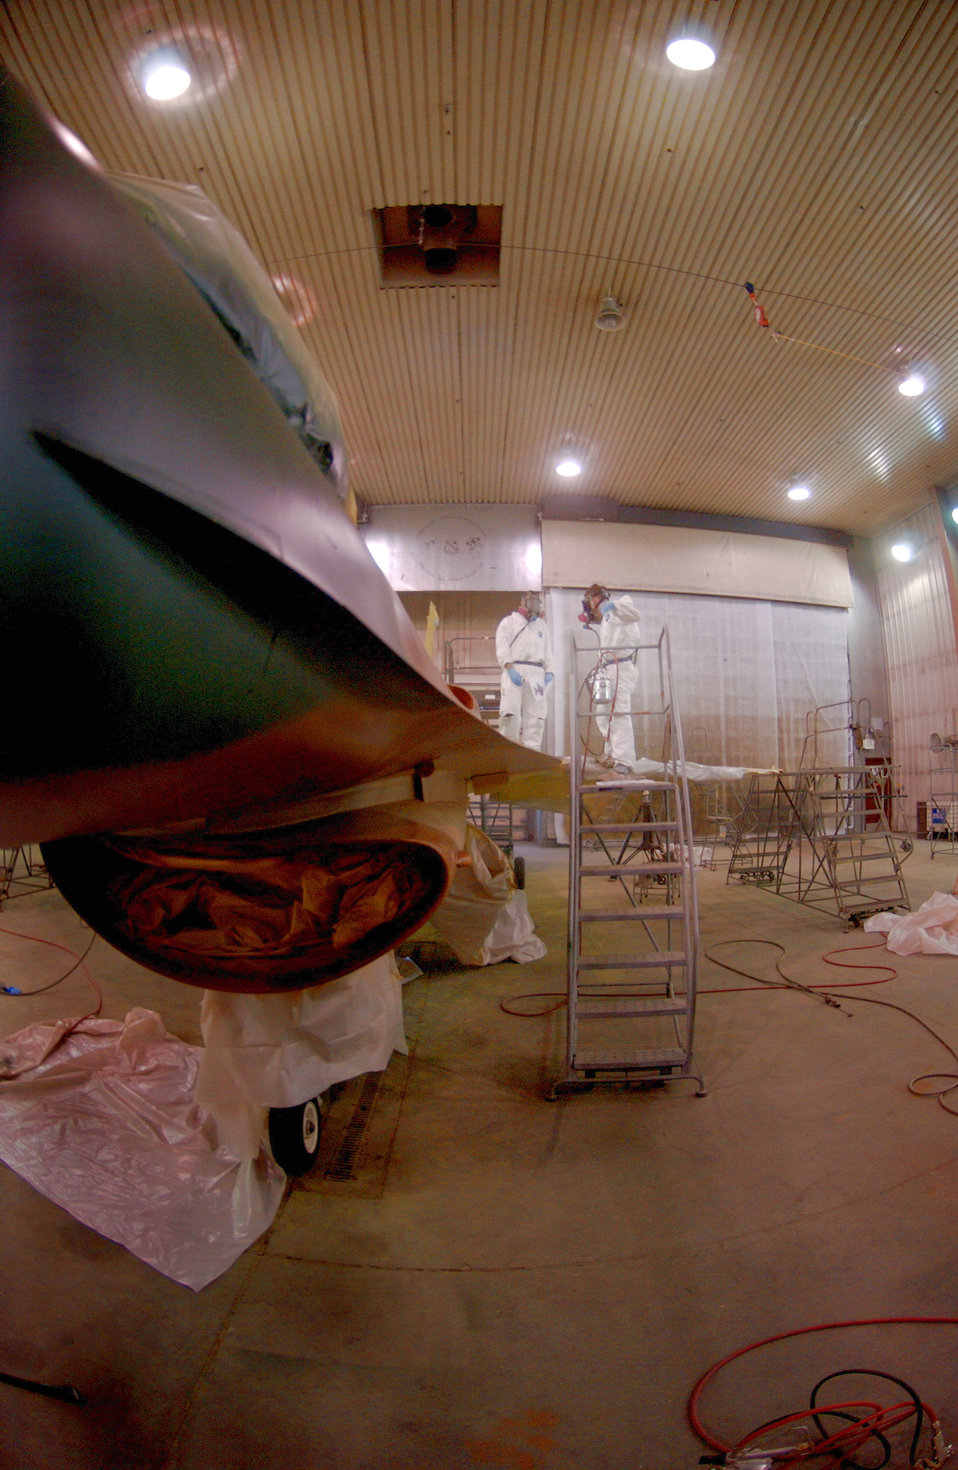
Fresh Coat For New Beginning

Airman 1st Class Eric Rickards sits under an F-16 while awaiting more paint at the corrosion facility Feb. 14. Each aircraft that arrives at Eielson Air Force Base, Alaska, will have a camouflage color scheme applied to stand out from its counterparts while participating in Red Flag-Alaska. Airman Rickards is a 354th Maintenance Squadron sheet metal worker.